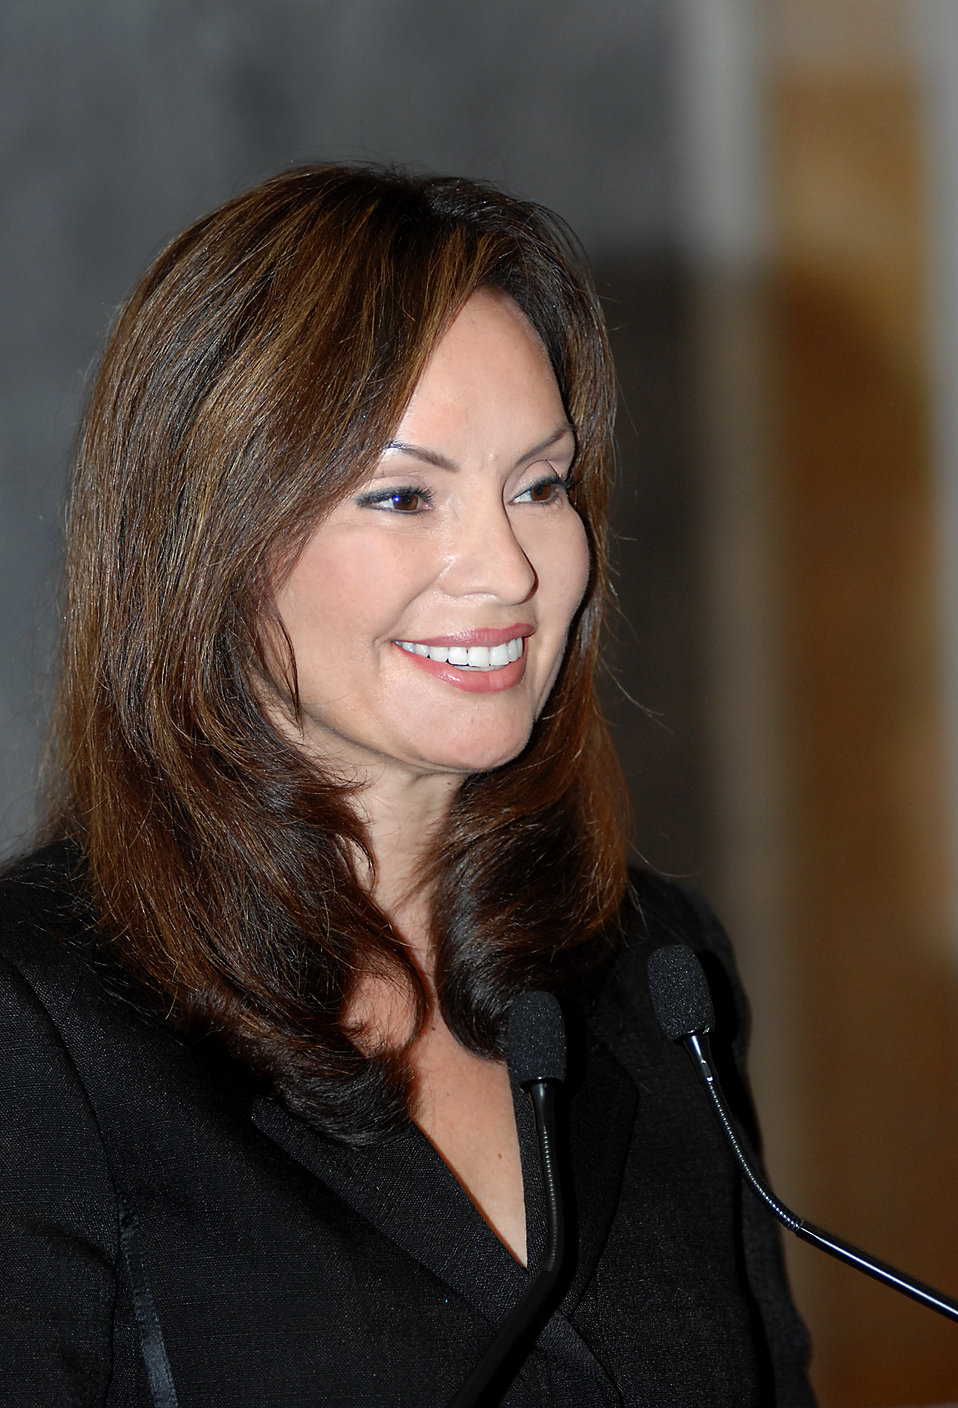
Rios swearing-in

August 20, 2009, Rosie Rios was sworn in as Treasurer of the United States.